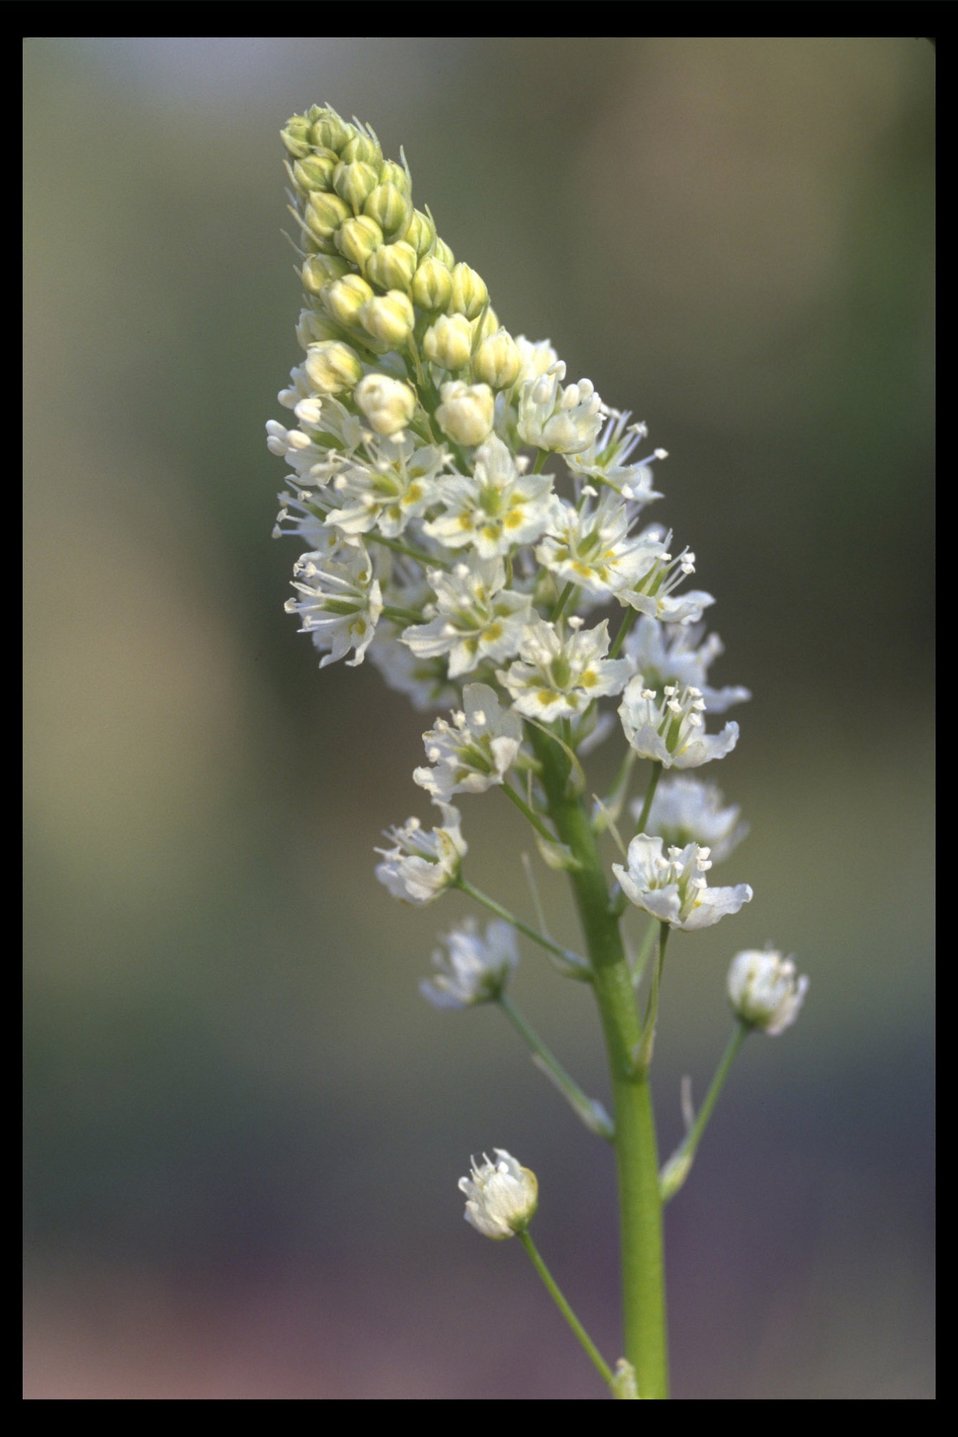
Death Camas (Zigadenus venenosus) near the trailhead at Upper Table Rock.